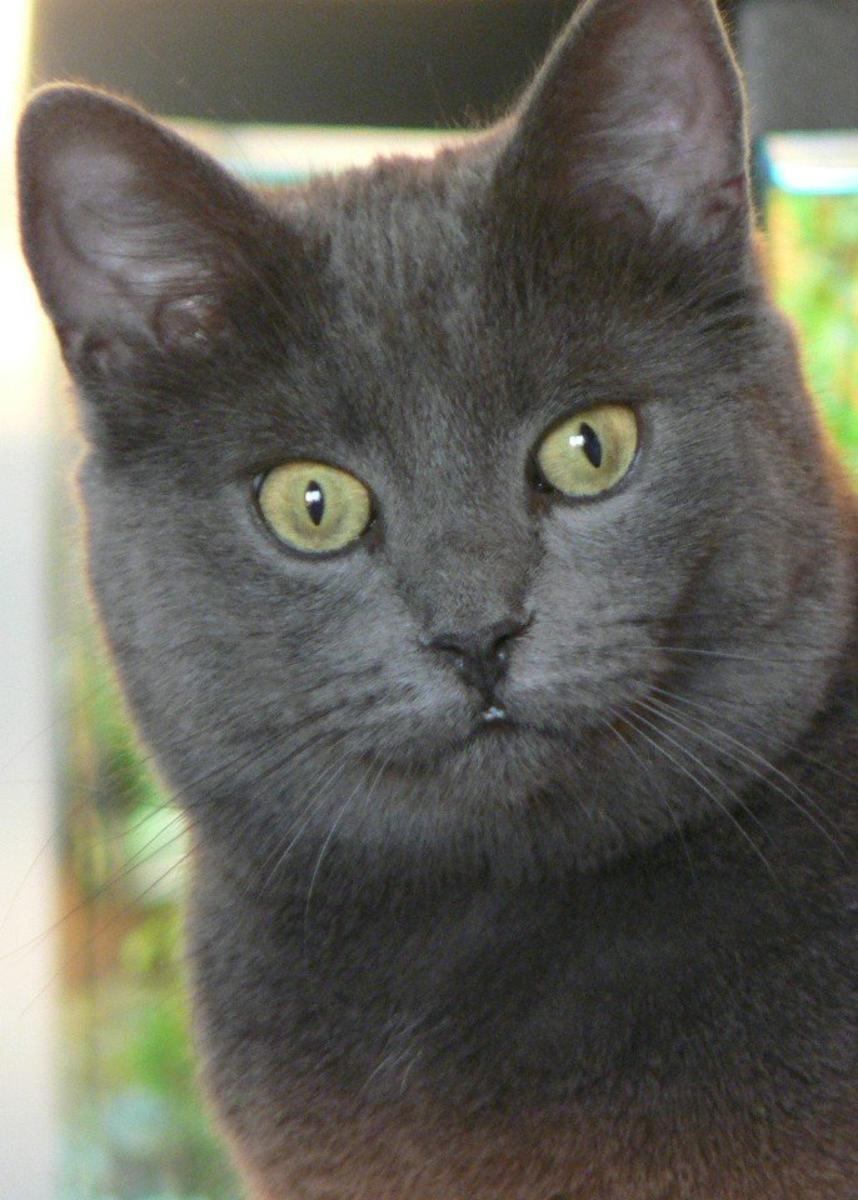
English:
Image title: Cat with staring eyes Image from Public domain images website, http://www.public-domain-image.com/full-image/fauna-animals-public-domain-images-pictures/cats-and-kittens-public-domain-images-pictures/cat-with-staring-eyes.jpg.html